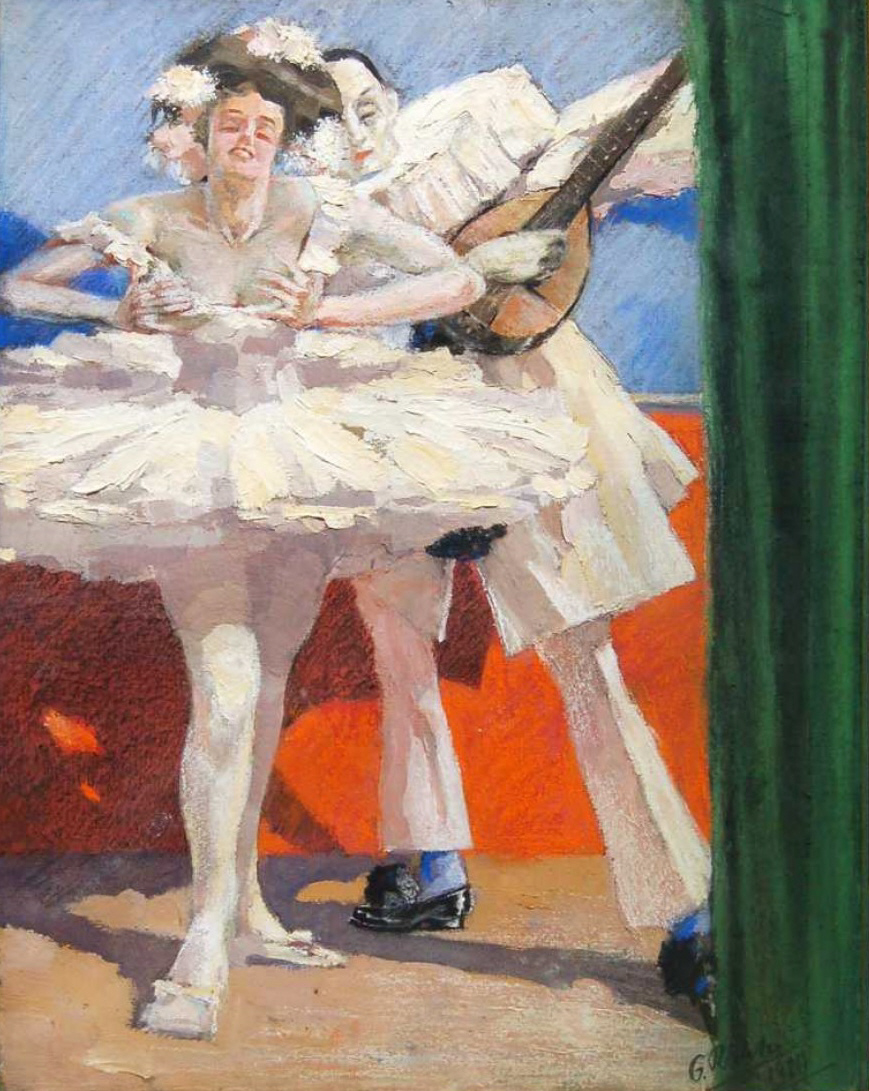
Georg Richter-Lößnitz Mimenlied 1912